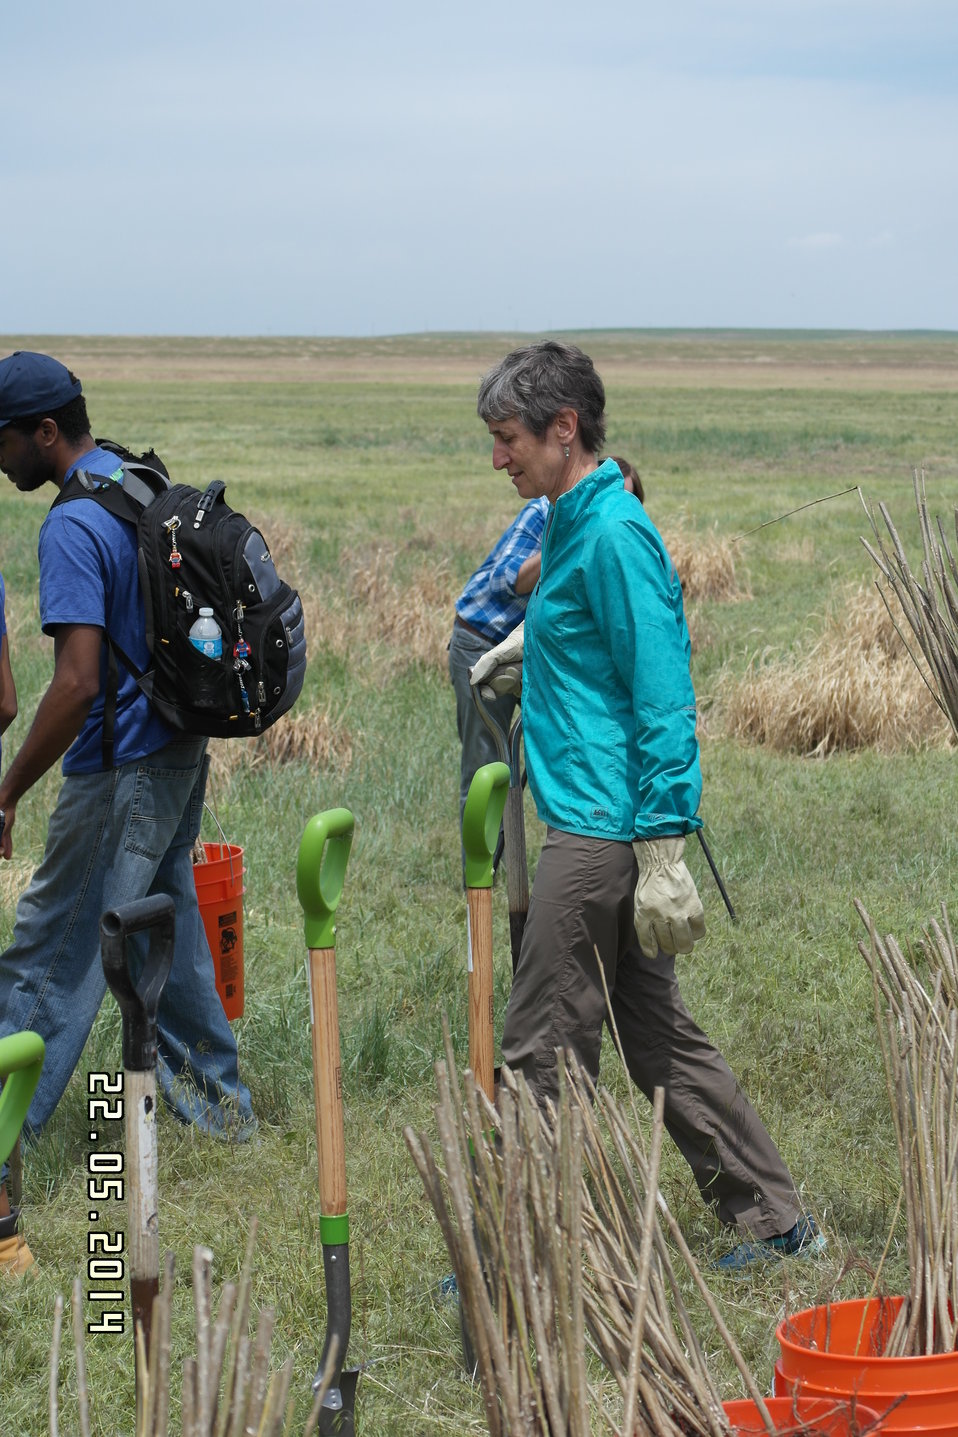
Secretary Jewell Announces $6.7 for Youth Conservation Job

Interior Secretary Sally Jewell helps local youth conservation groups plant cottonwood trees at Rocky Mountain Arsenal National Wildlife Refuge.